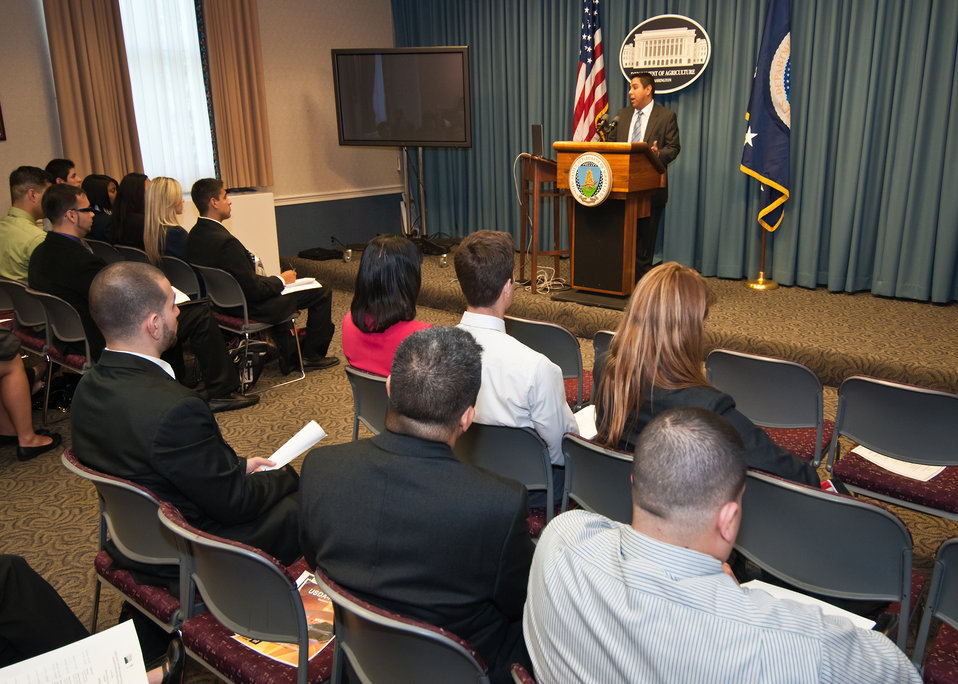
Hispanic Serving Institutions Program representative Ramiro Porras welcomes United States Department of Agriculture (USDA) Hispanic Association of Colleges and University (HACU) and Tribal College summer interns during their orientation at USDA in Washington, DC, Monday, Jun. 6, 2011. The HACU/Tribal College National Internship Program represents more than 400 colleges and universities committed to higher education in the U.S., Puerto Rico, Latin America, Spain and Portugal and places student interns each year with federal agencies in Washington, DC or in field offices around the country.